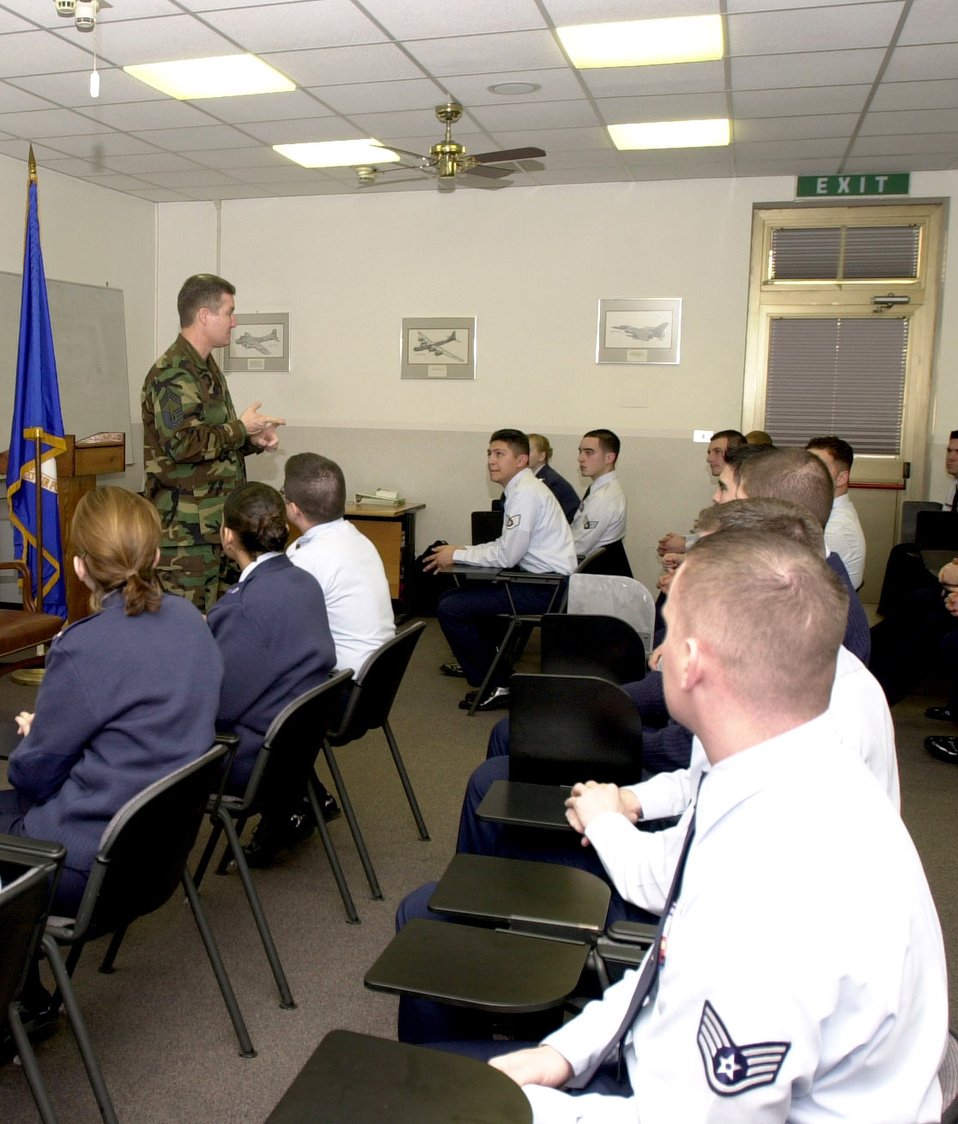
Chief Murray at Airman Leadership School

Chief Master Sgt. of the Air Force Gerald R. Murray mentors to students at the Aviano Air Base, Italy, Airman Leadership School. He talked with the students on the importance of professional military education and their future role as supervisors.